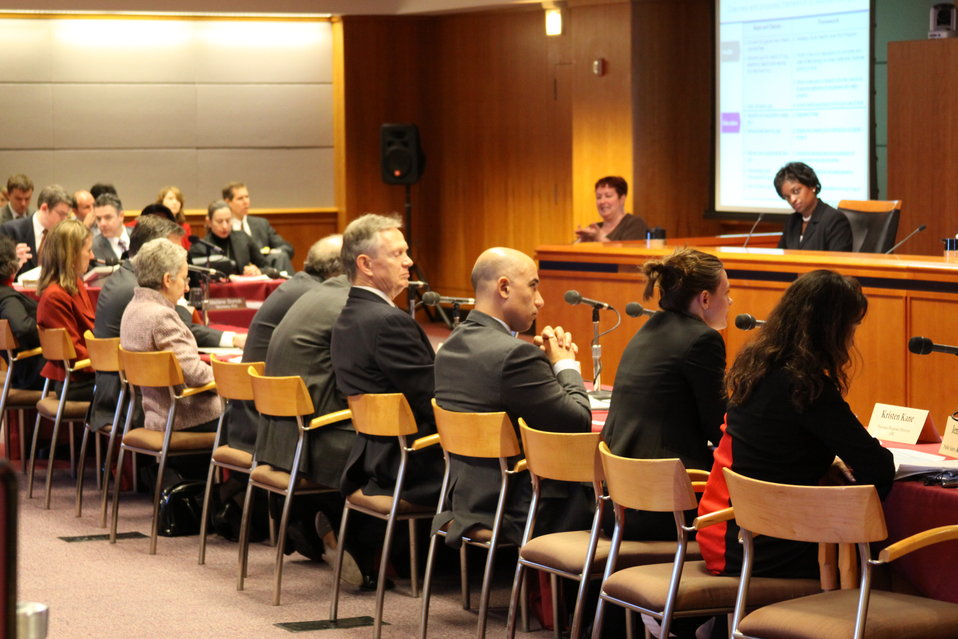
December Commission Meeting